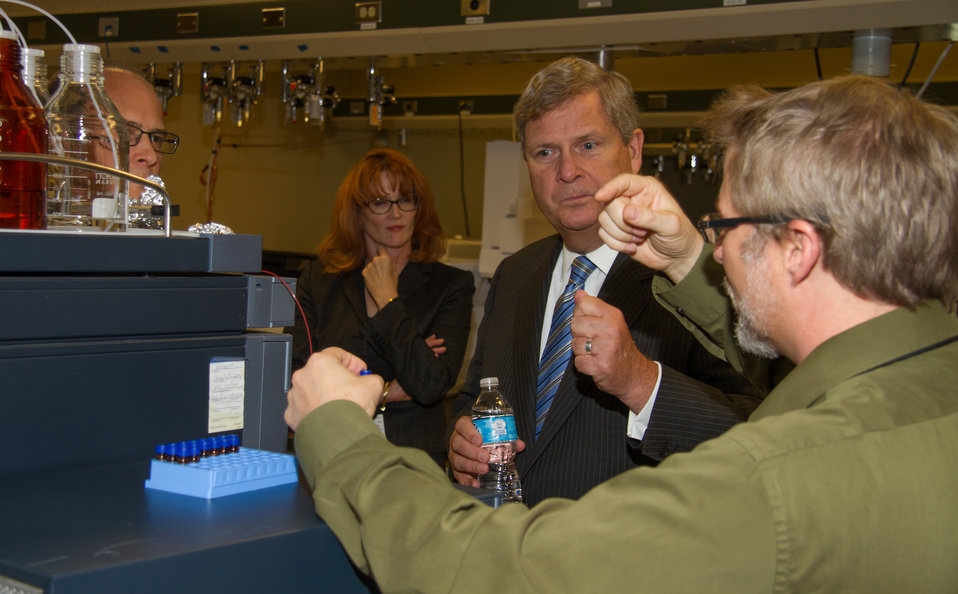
Tom Weber, (r) Leader of Grain Inspection, Packers and Stockyards Administration (GIPSA), Trace Analysis Laboratory, explains to Agriculture Secretary Tom Vilsack the process of preparing and testing grain samples for the presence of pesticide residues in Kansas City, MO, on Wednesday, Oct. 23, 2013. Dr. Tim Norden, Chief of GIPSA's Analytical Chemistry Branch, and Mary Alonzo, Director of GIPSA's Technology and Science Division, watch.